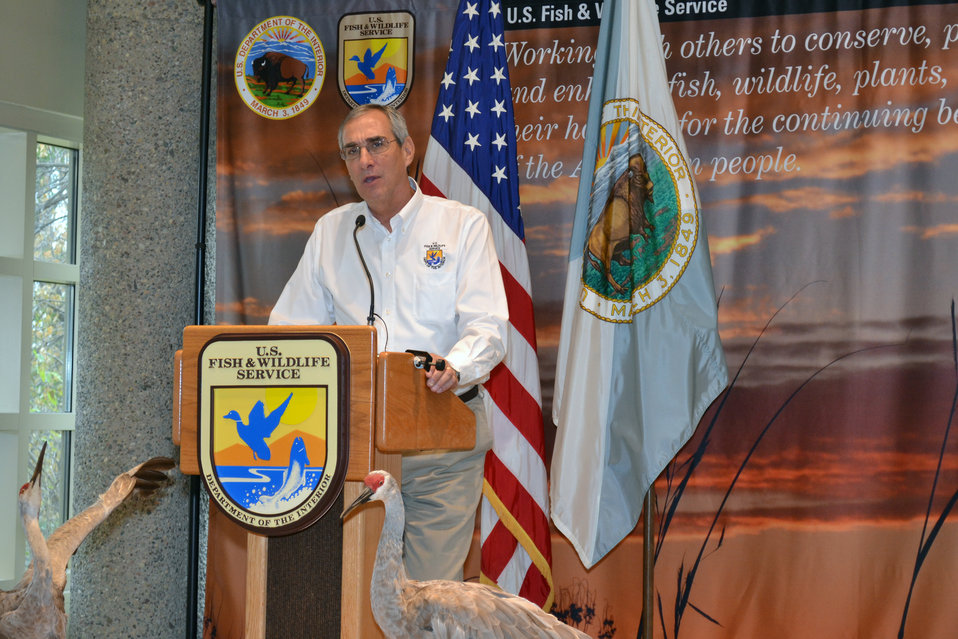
Providing Context

Regional Director Tom Melius welcoming the media and partners to the Banking on Nature press conference at Minnesota Valley National Wildlife Refuge.